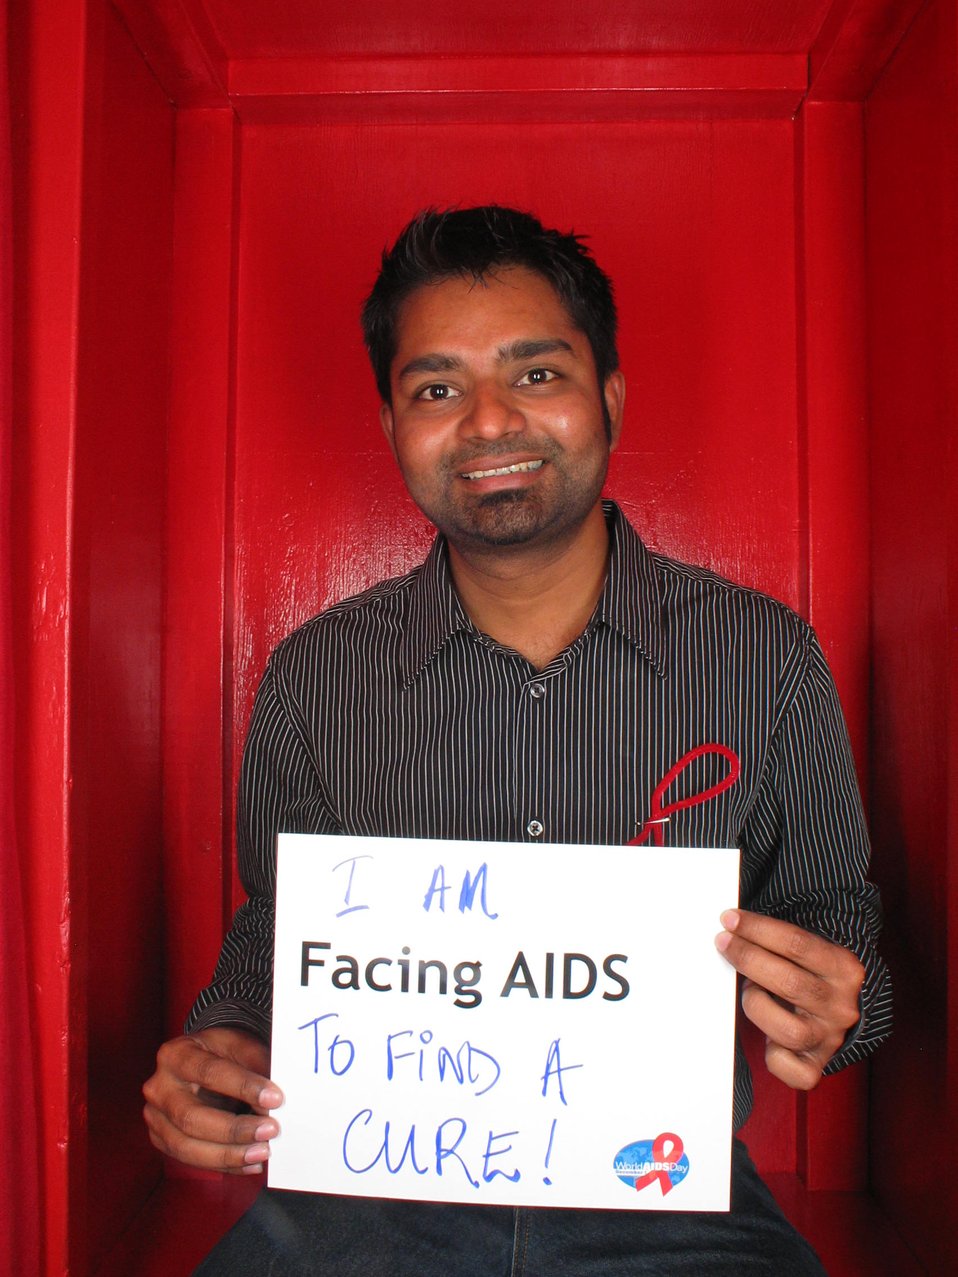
I am Facing AIDS to find a cure!